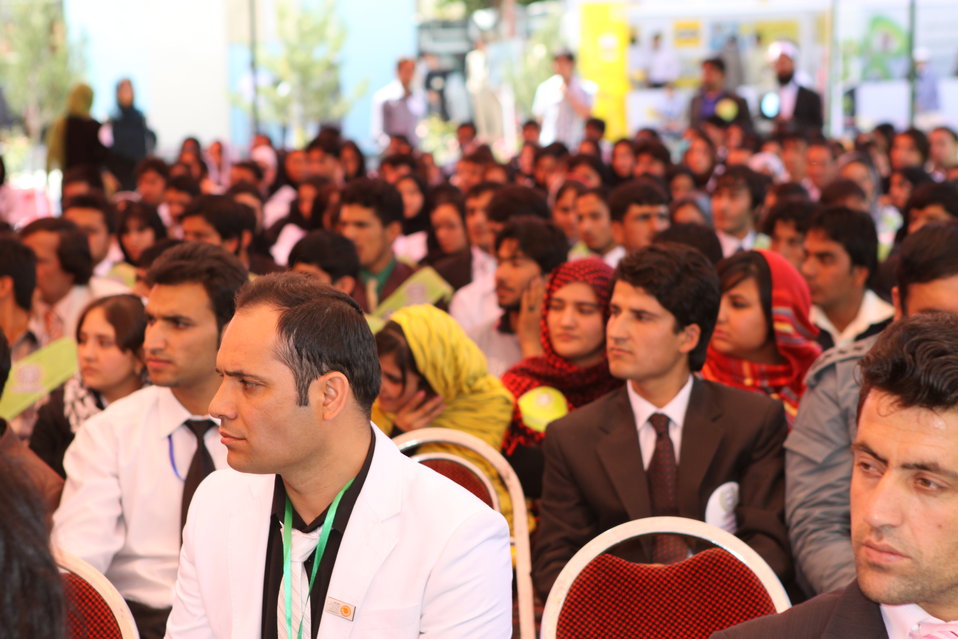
100522 ATVI Graduation 070